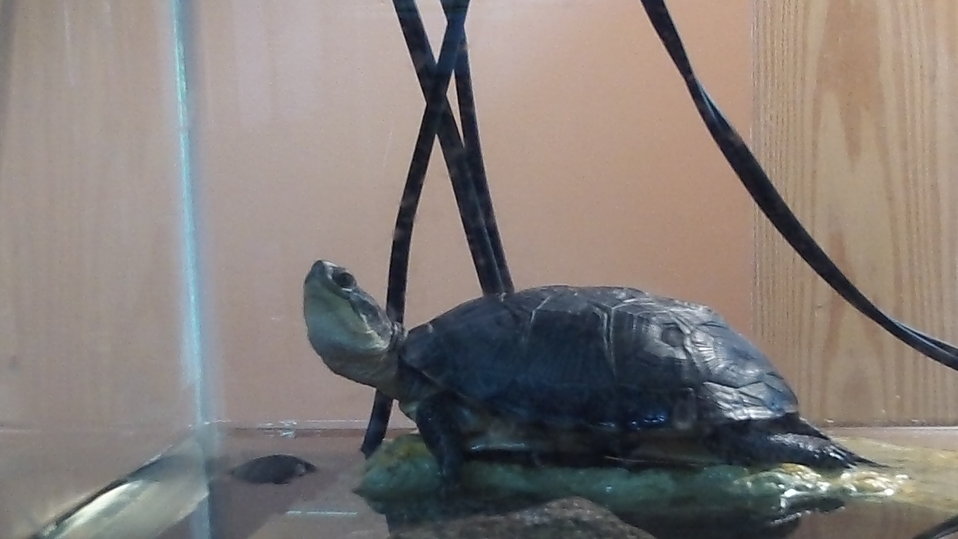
Assabet River National Wildlife Refuge

Turtle at the Assabet River National Wildlife Refuge, Sudbury, MA.